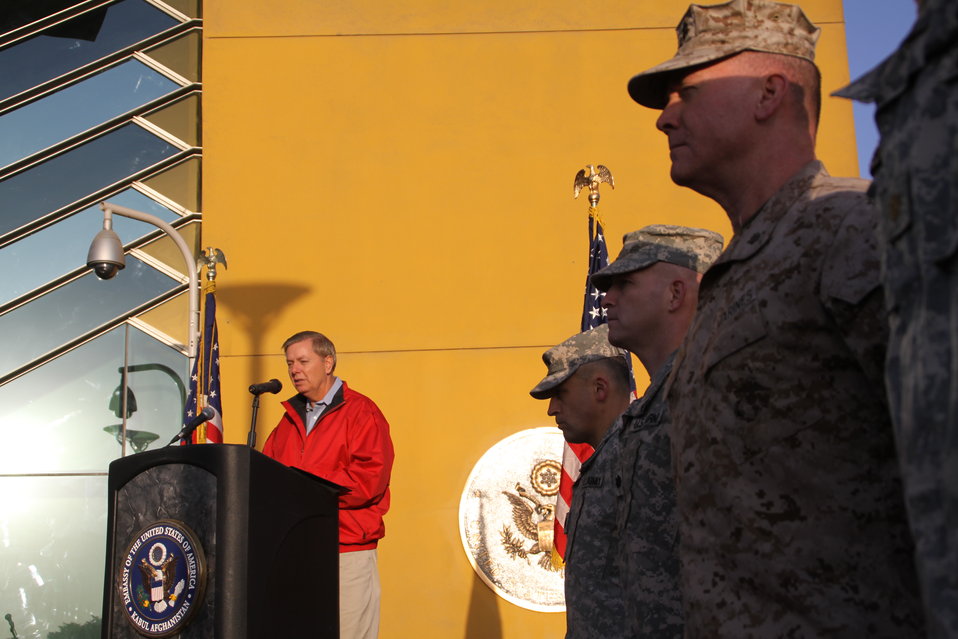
Senator Graham